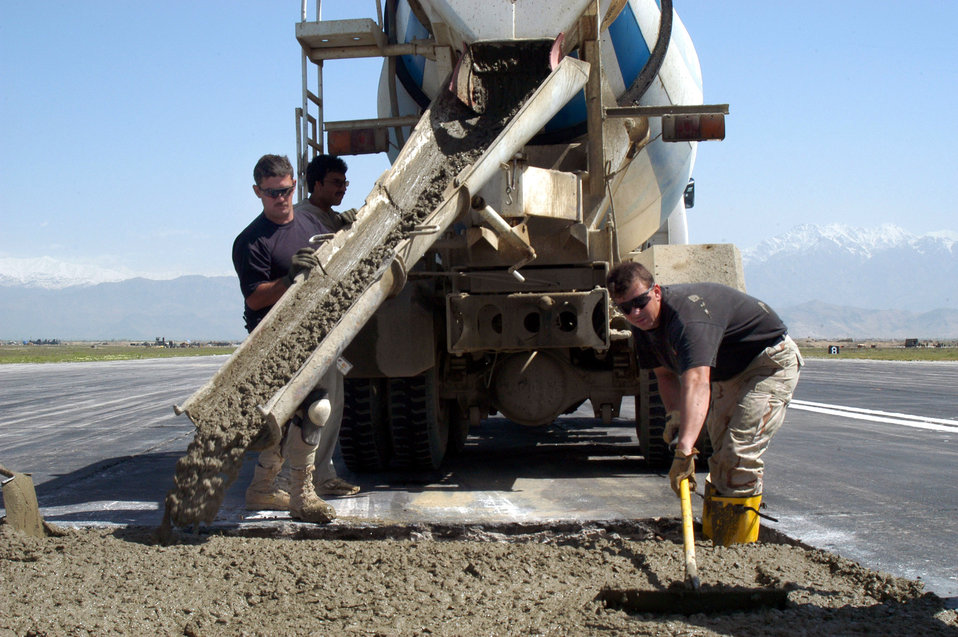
In the mix

OPERATION ENDURING FREEDOM (AFPN) -- Tech. Sgt. John Foster (left) pours concrete on the active runway at Bagram Air Base, Afghanistan, as part of a $2.3 million airfield repair project. Tech. Sgt. James Holman spreads concrete in a hole. Foster is the runway repair project manager with the 455th Expeditionary Operations Group civil engineer element. He is deployed from the 18th Civil Engineer Squadron at Kadena Air Base, Japan. Holman is from the 48th Civil Engineer Squadron at Royal Air Force Lakenheath, England.